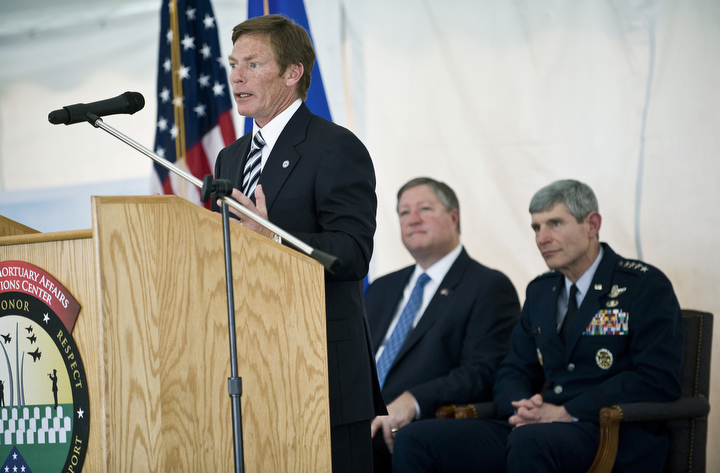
Groundbreaking for the Fisher House for the Families of the Fallen

Kenneth Fisher, Fisher House Foundation chairman, makes remarks during the groundbreaking ceremony for the new Fisher House and meditation pavilion for the Center for the Families of the Fallen, May 1, at Dover Air Force Base, Del. Mr. Fisher, along with Michael B. Donley, secretary of the Air Force, Gen. Norton A. Schwatrz, Air Force chief of staff, and Col. Robert H. Edmondson, commander of the Air Force Mourtuary Affairs Operations Center, presided over the ceremony.